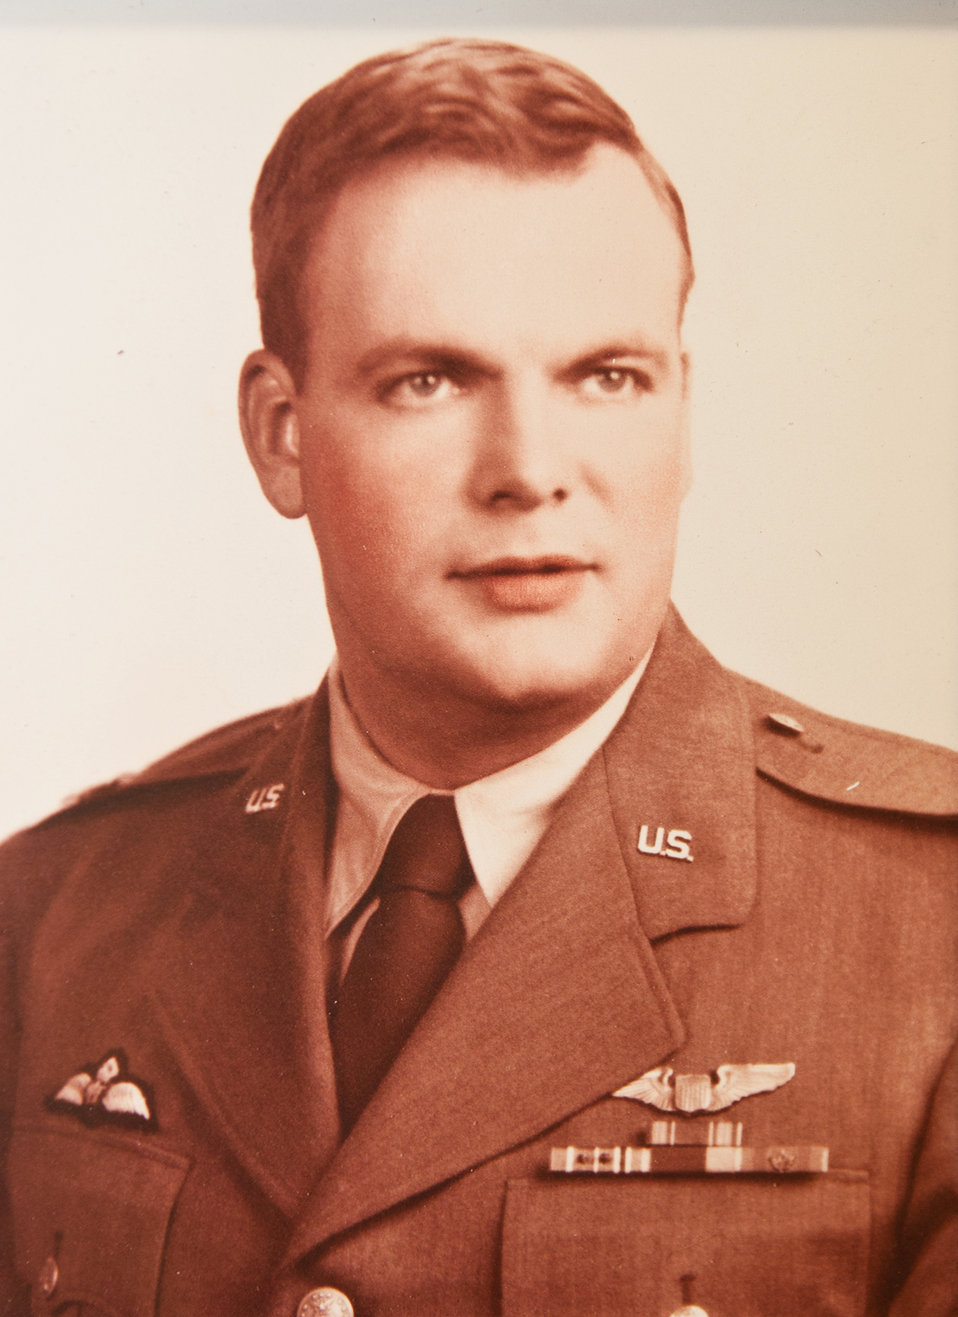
Prisoner of War Medal

1st Lt. Merlin R.